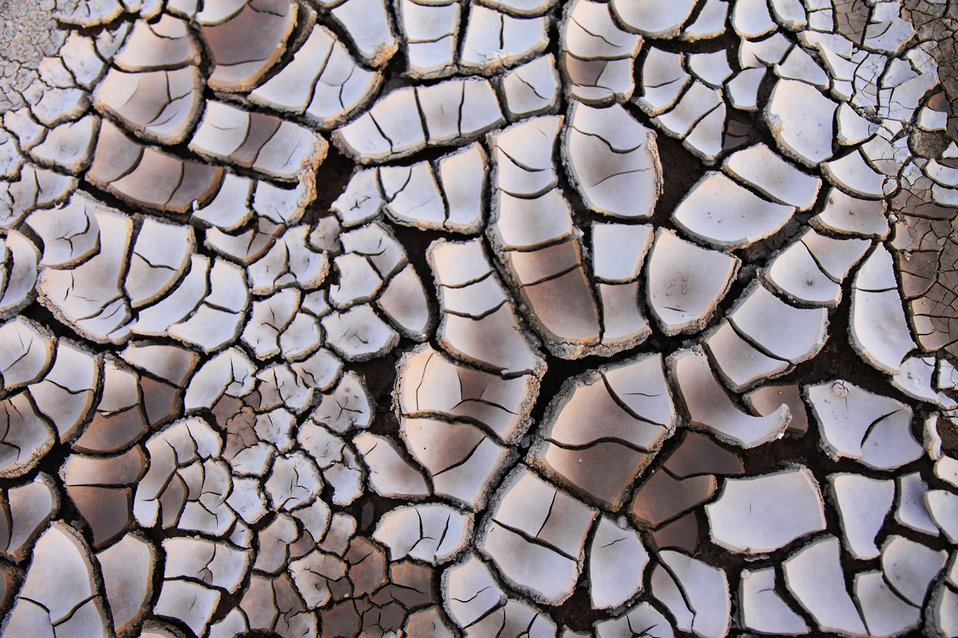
Dry soil structure.